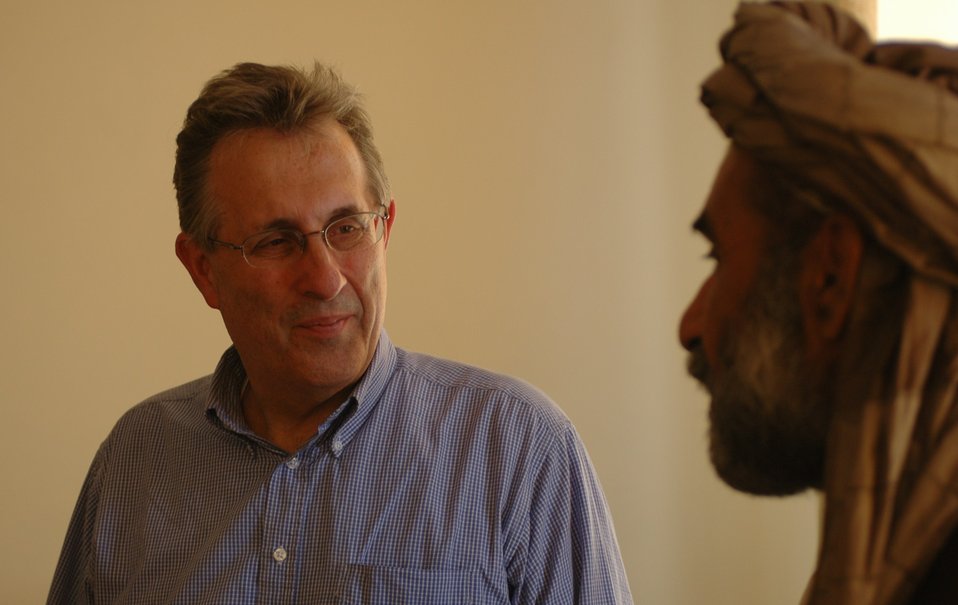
Dr Shah Visits Argandab April 10, 2010